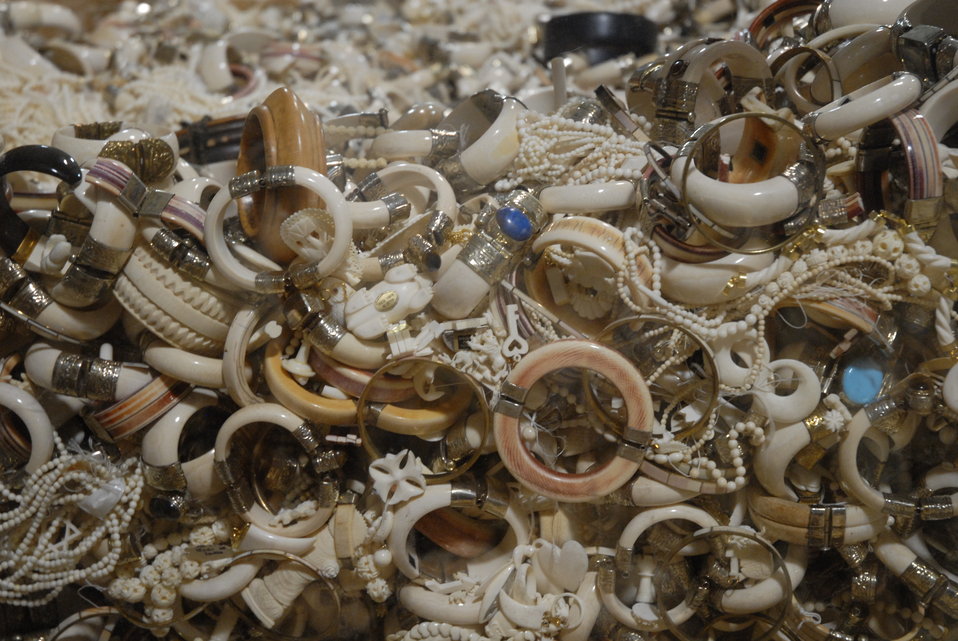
Confiscated ivory jewelry slated for destruction in the crush.